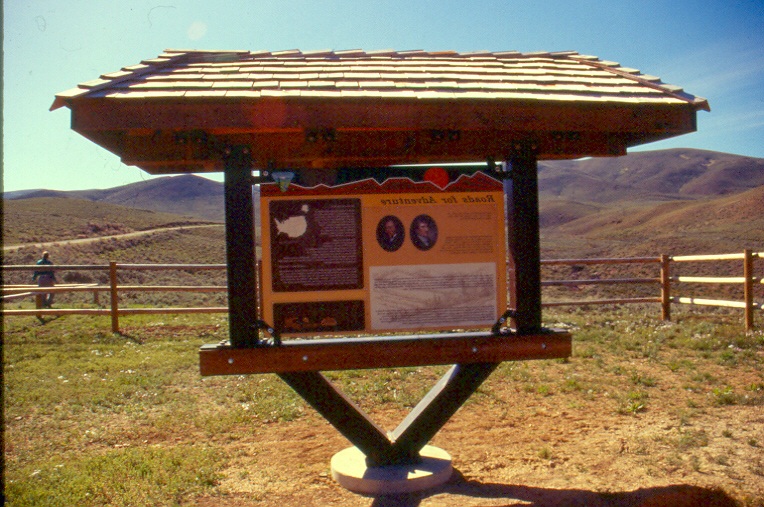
Recreation Site Information Site Sign Salmon Field Office UCSC Upper Columbia Salmon Clearwater District